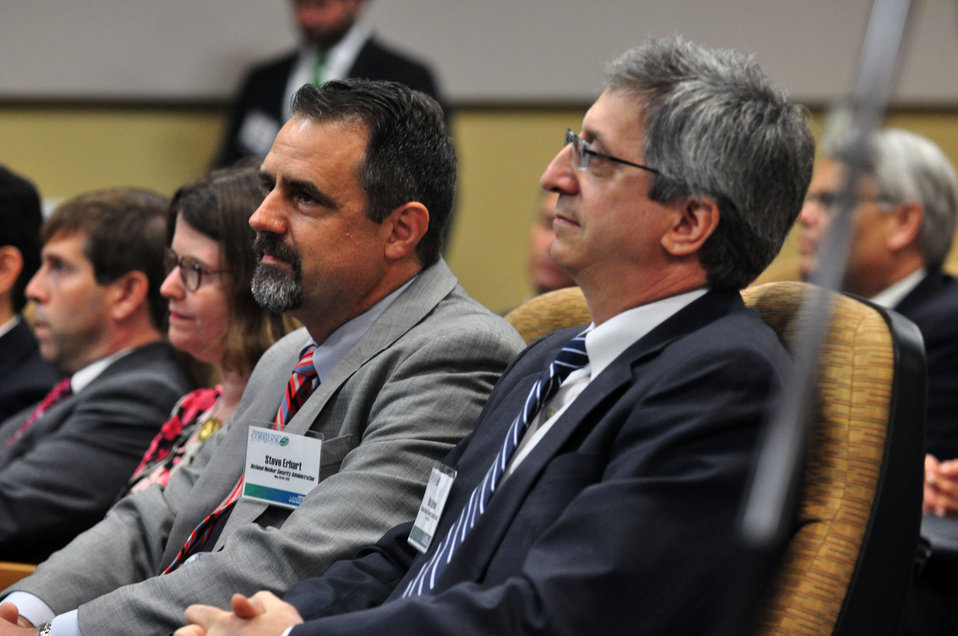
Tennessee Valley Corridor Summit Oak Ridge

13-062 DOE photo Lynn Freeny 5-29-2013 Oak Ridge Tennessee